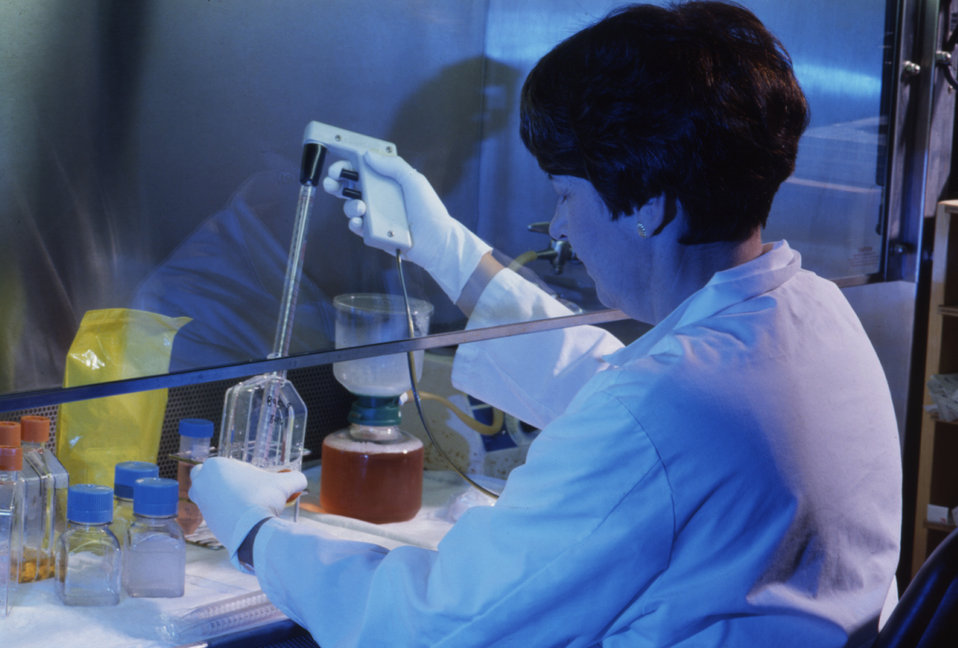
This laboratorian is pipetting hazardous materials while wearing protective clothing and working in a ventilated environment.